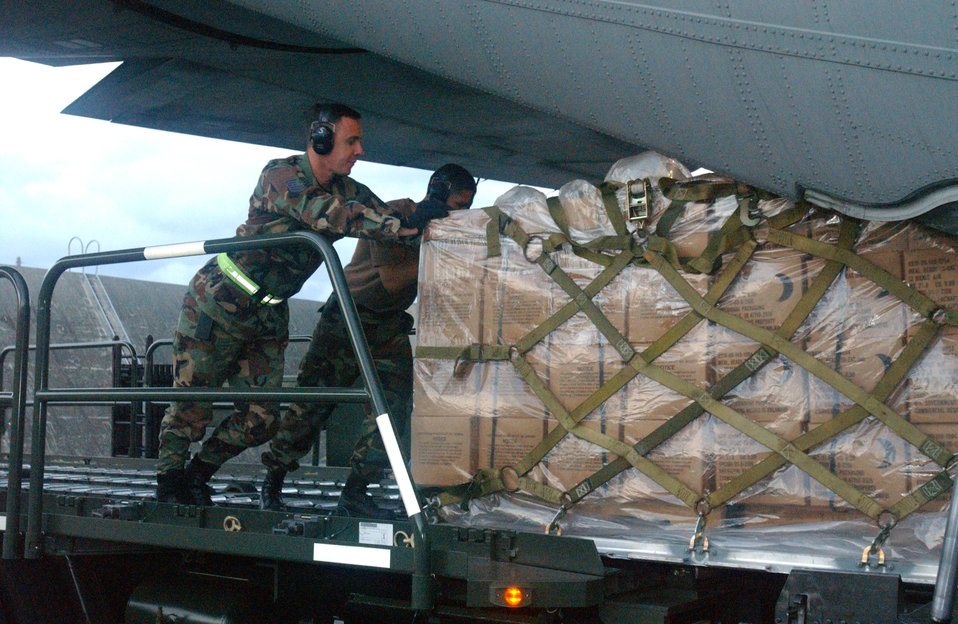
Airmen keep the supplies moving

KADENA AIR BASE, Japan -- Airmen here help load an aircraft pallet of packaged meals bound for Southeast Asia as part of disaster relief following a 9.0-magnitude earthquake that struck Dec. 26 off the coast of Indonesia. The quake caused tsunami waves that have affected 12 countries and have killed more than 100,000 people. More than 3,000 cases of meals and four aircraft pallets of fresh water were processed through the cargo area here Dec. 29. The 18th Wing is providing relief supplies and personnel to help with the humanitarian effort.